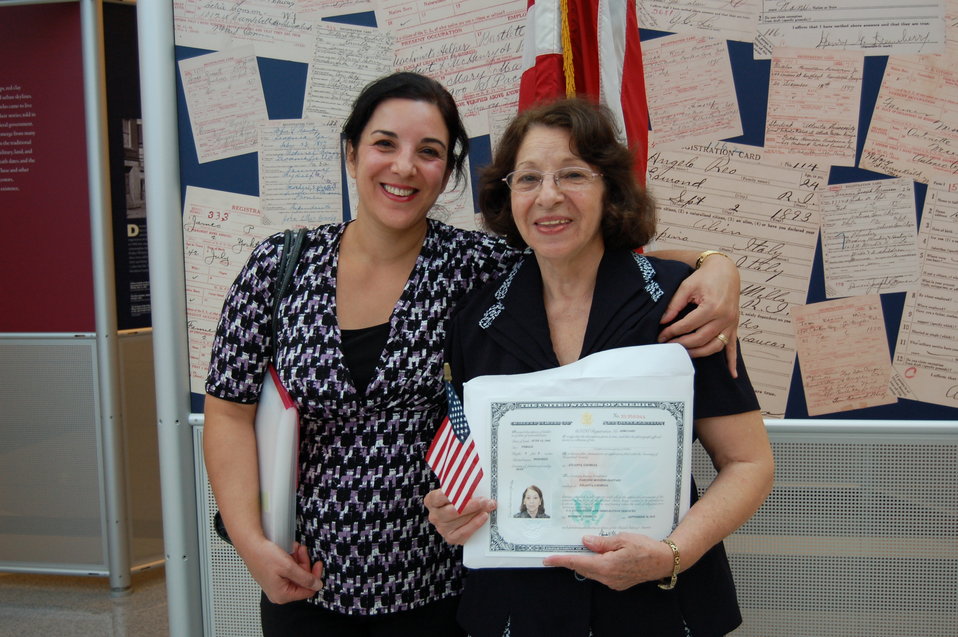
New Citizens